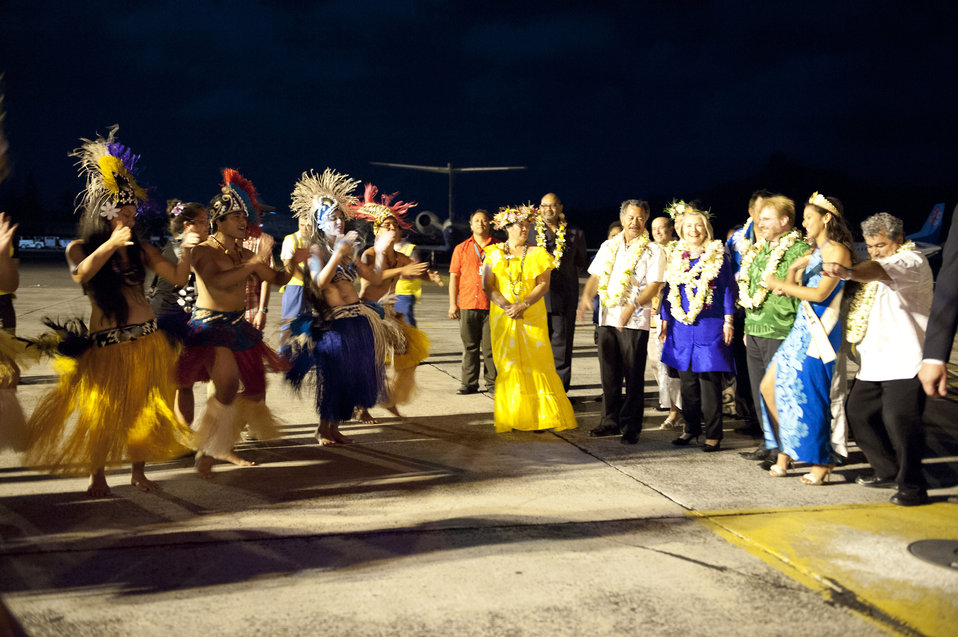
Secretary Clinton Welcomed to the Cook Islands

U.S. Secretary of State Hillary Rodham Clinton is welcomed to Rarotonga, the Cook Islands, August 30, 2012.